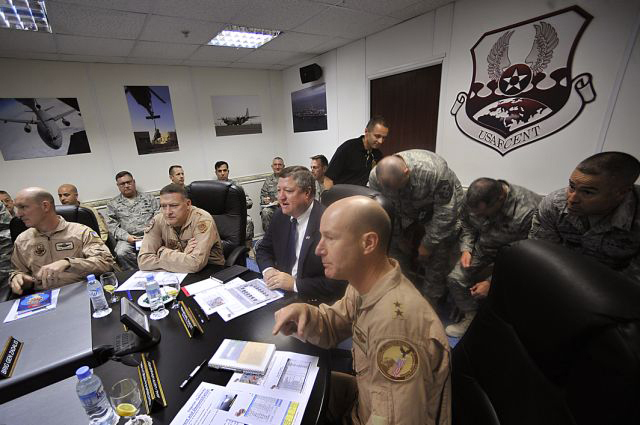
Secretary Donley visits the CAOC

Secretary of the Air Force Michael Donley receives the Warfighter briefing Oct. 11 from Maj. Gen. Doug Raaberg, Deputy Combined Forces Air Component commander, U.S. Central Command at the Combined Air and Space Operations Center located in Southwest Asia.